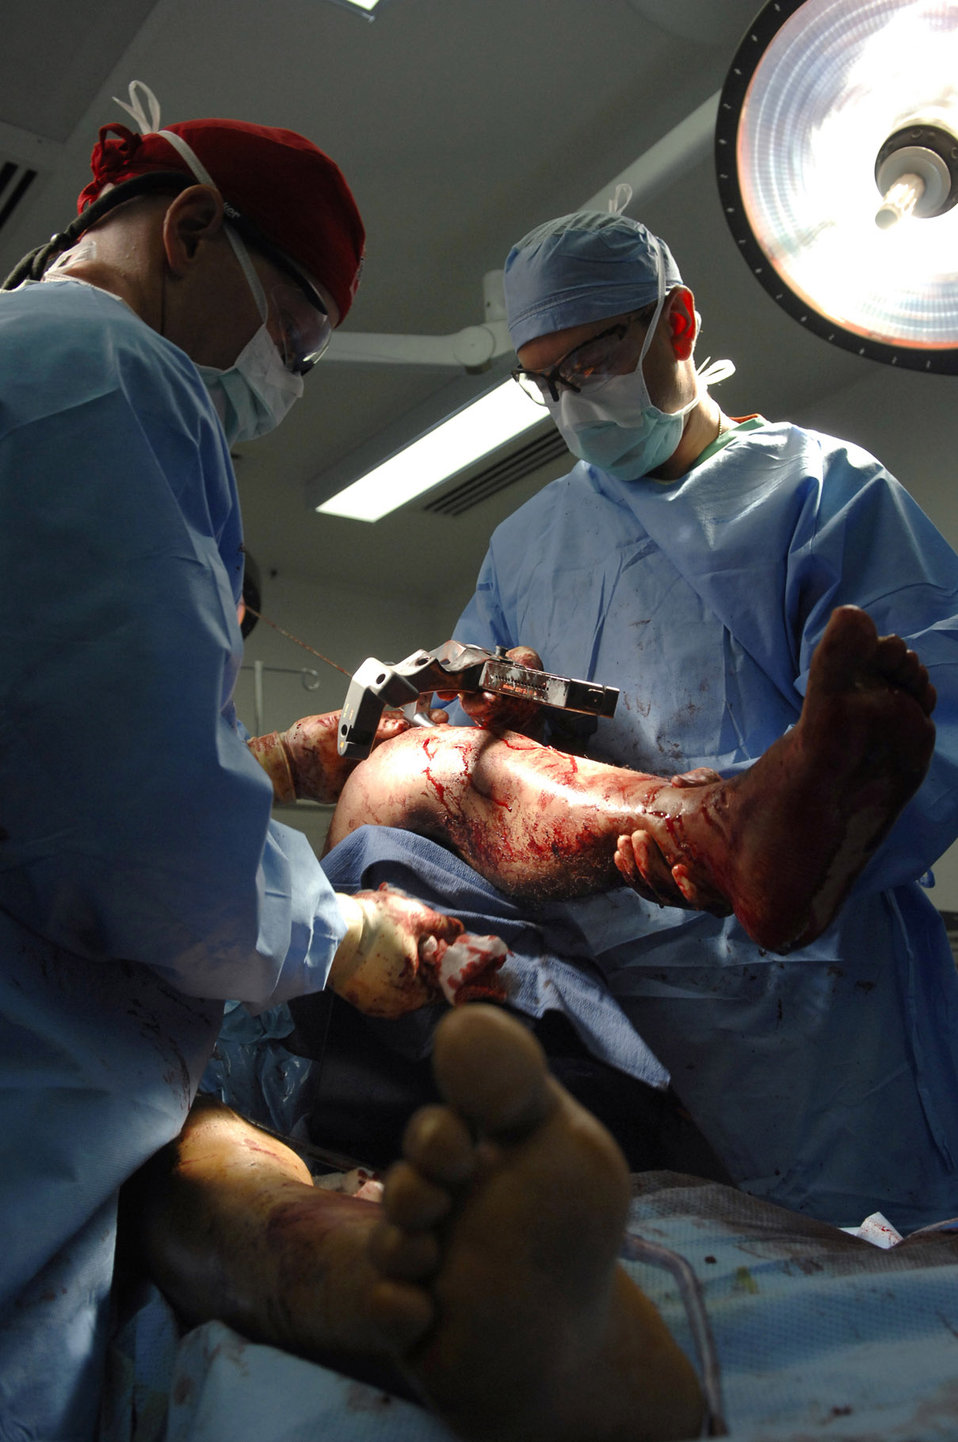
A new leg to stand on

Maj. (Dr.) Michael Charlton and Capt. Michael Raethka check a rod against the leg of a patient prior to boring out the center to make a canal for the permanent rod July 7 at Joint Base Balad, Iraq. The rod will stabilize the leg and help with healing. The patient should regain the ability to walk. Doctor Charlton is a 332nd Expeditionary Medical Operations Squadron orthopedic trauma surgeon deployed from Lackland Air Force Base, Texas. Captain Raethka is a 332nd EMDOS physician's assistant deployed from Travis Air Force Base, Calif.